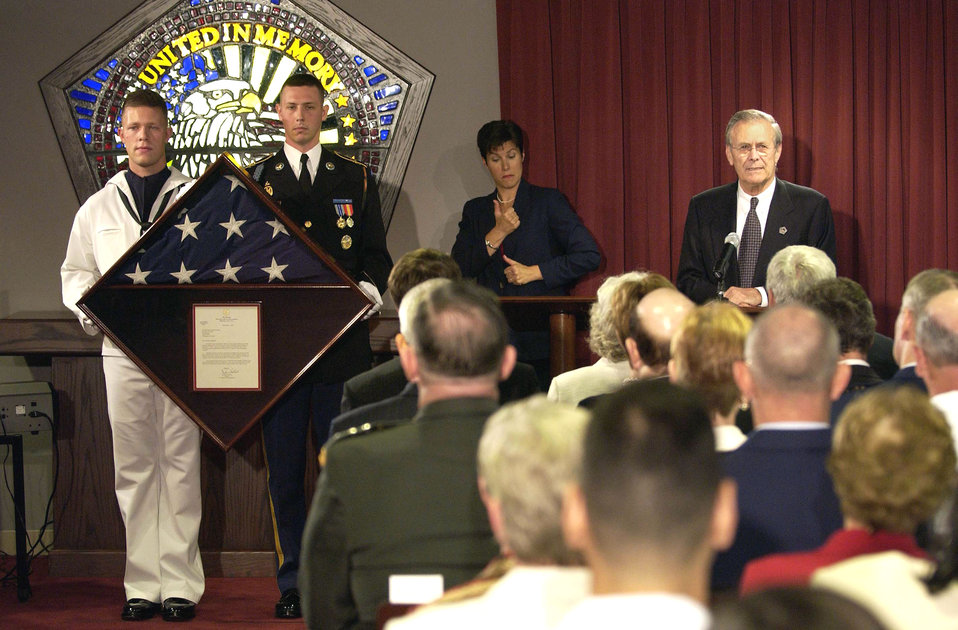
9-11 remembered

WASHINGTON -- Secretary of Defense Donald Rumsfeld speaks to attendees in the Pentagon Chapel on Sept. 11. A flag presentation was held during the dedication ceremony of stained glass windows crafted in memory of the 184 people who died during the terrorist attack on the Pentagon.